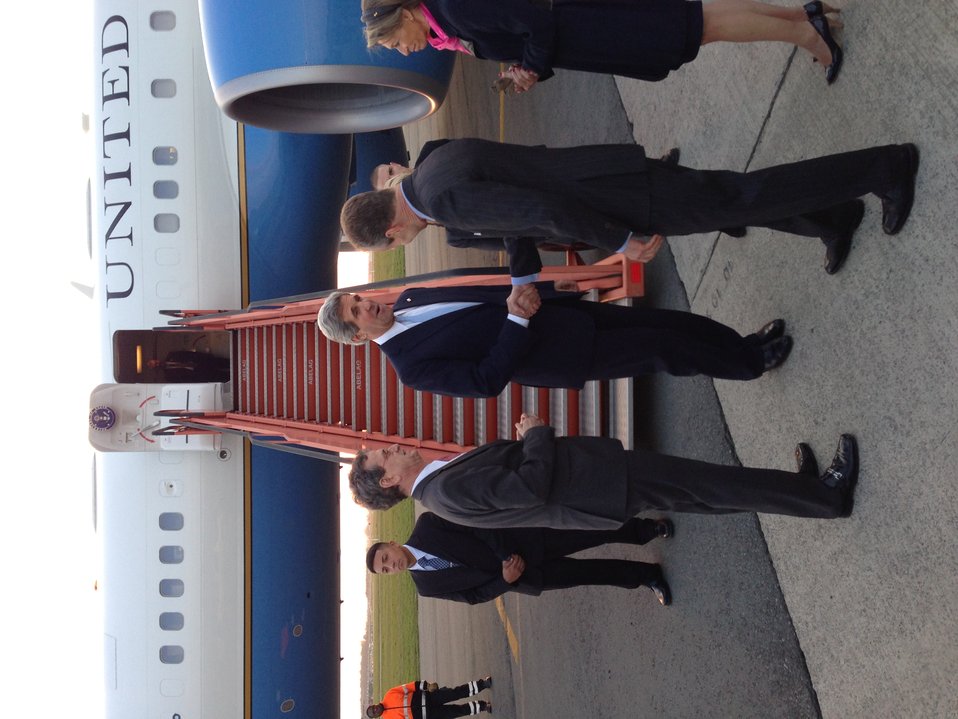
Secretary Kerry Arrives in Belgium

U.S. Secretary of State John Kerry is greeted by Belgian Ambassador Pierre Labouverie upon arrival in Brussels, Belgium, on April 21, 2013.